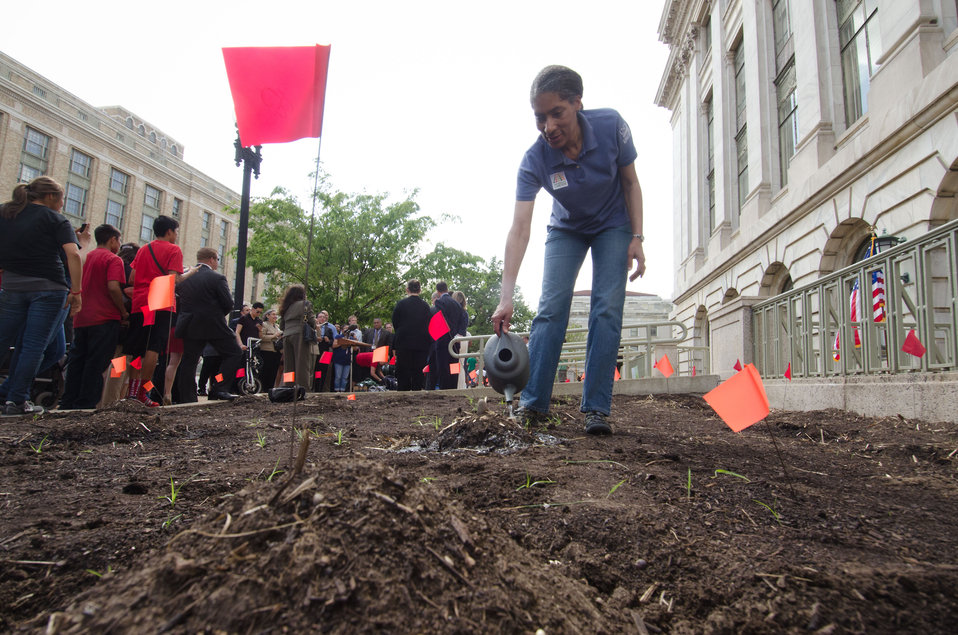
An Executive Master Gardner adds a little water around freshly planted seeds that more than 30 students from Eastern and Western Tribes, Southeast Alaska, and Tuba City, Arizona planted in the Roots of America Agriculture Garden, part of the Peoples Garden at the U.S. Department of Agriculture in Washington, DC, on Wednesday, April 21, 2011. The vegetable seeds are indigenous to North America.